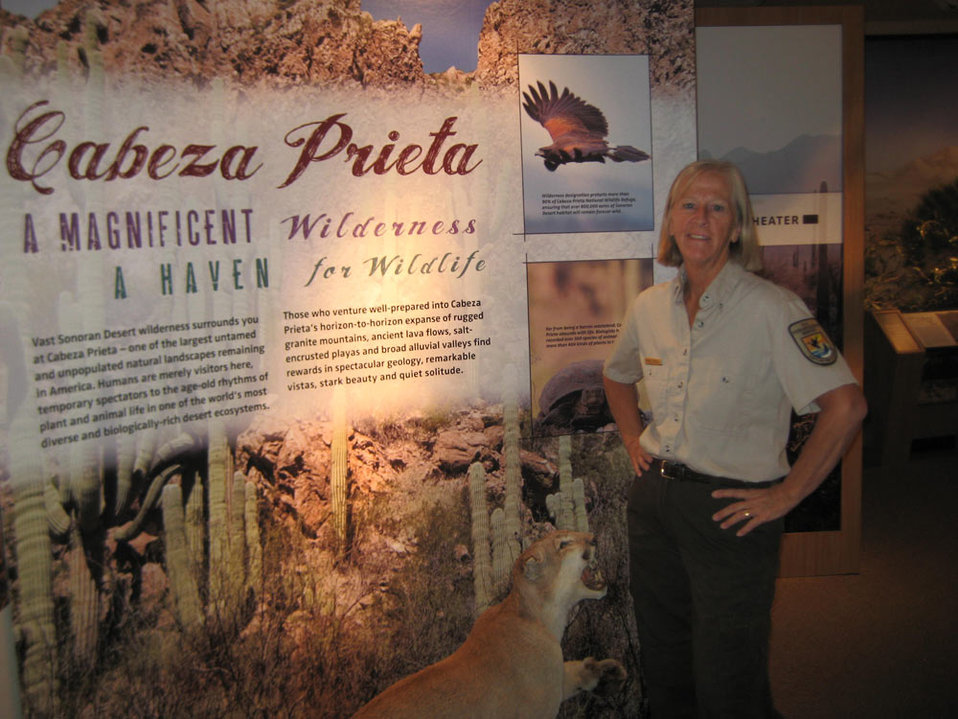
Margot Bissell-Southwest Region

Air Force veteran Margot Bissell is the Public Use Assistant at Cabeza Prieta National Wildlife Refuge in Arizona.